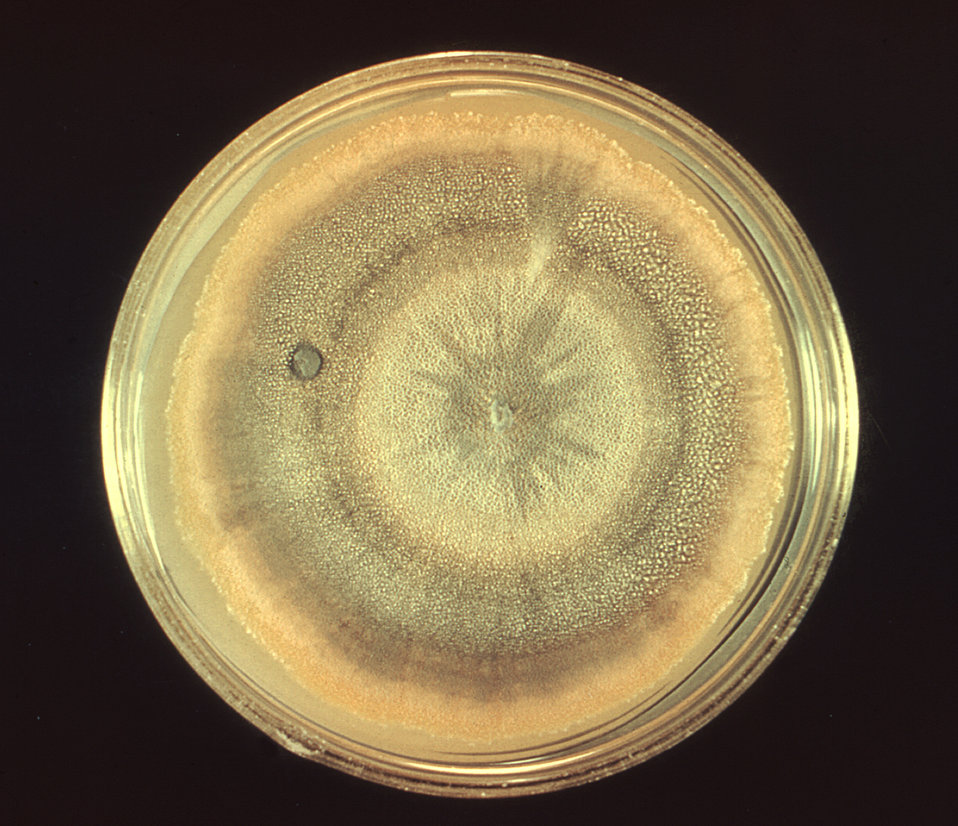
This photograph depicts a frontal view of a Petri dish culture containing Sabouraud Dextrose agar, upon which a colony of Penicillium multicolor (Strain A-797) fungal organisms had been grown, for a period of 18 days.